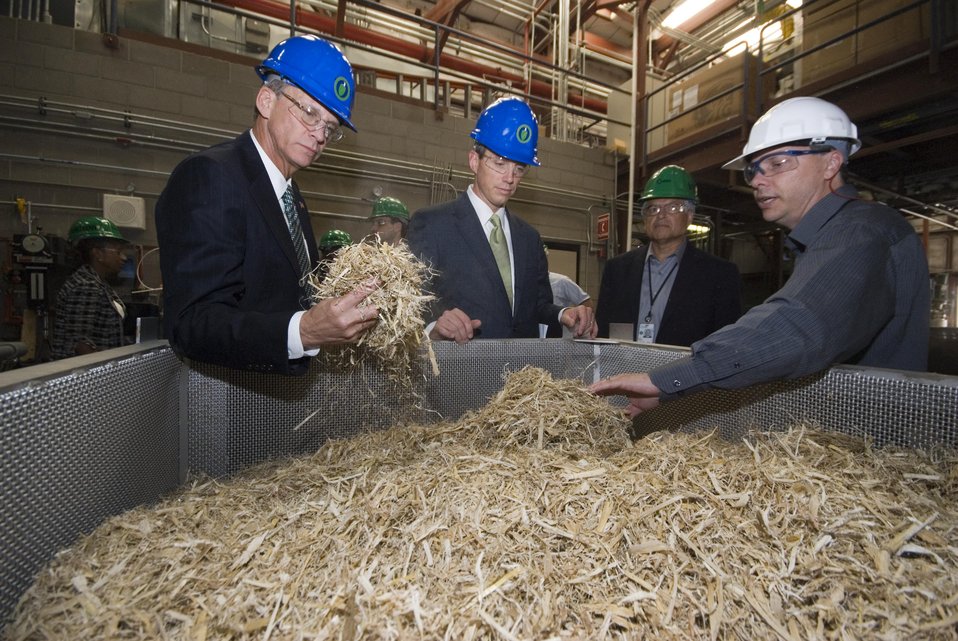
Under Secretary of Energy Bud Albright and Deputy Secretary of Energy Clay Sell visit the National Renewable Energy Laboratory in September 2007.

Under Secretary Albright, Deputy Secretary Sell, and NREL director Dan Arvizu are given a tour of the process development unit at NREL by scientist Dan Schell.